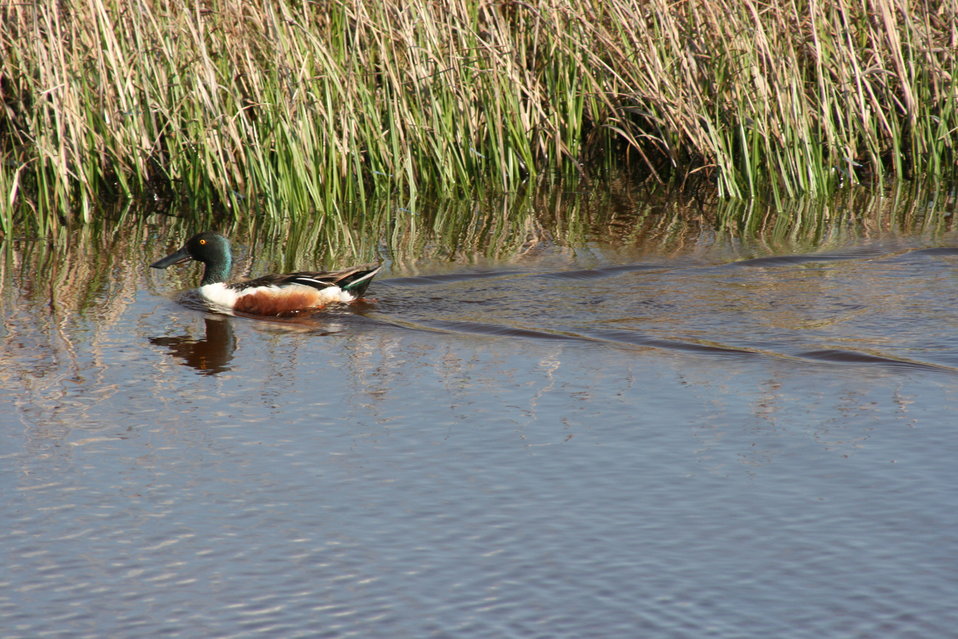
Northern Shoveler Drake

A male northern shoevler at Bowdoin NWR.